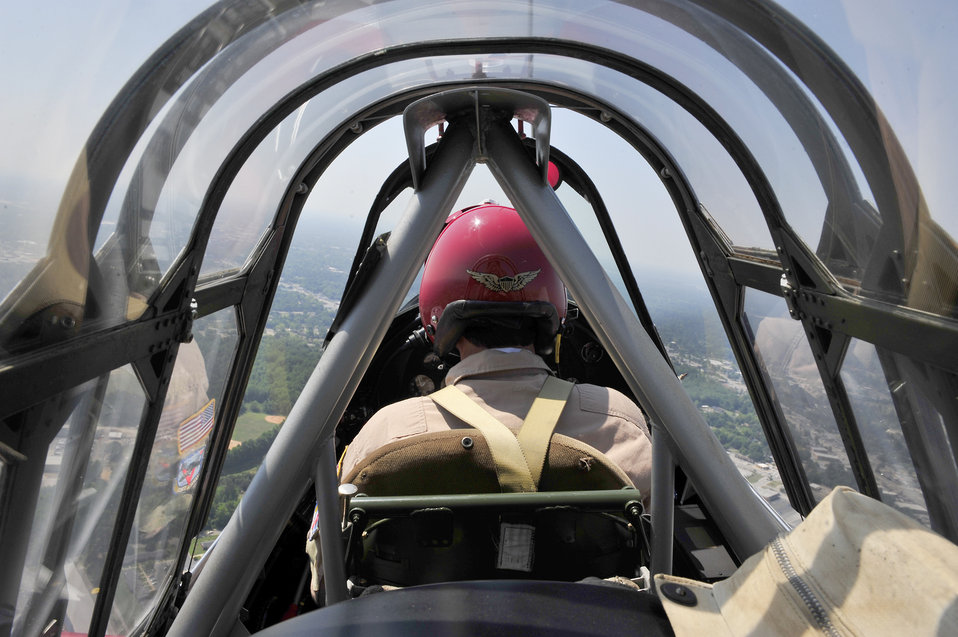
Look at the view!

An over-the-shoulder view of a pilot flying a T-6 Texan during ShawFest 2010 May 7, 2010, over Shaw Air Force Base, S. C. ShawFest is held every other year with many different aircraft performances and static displays.